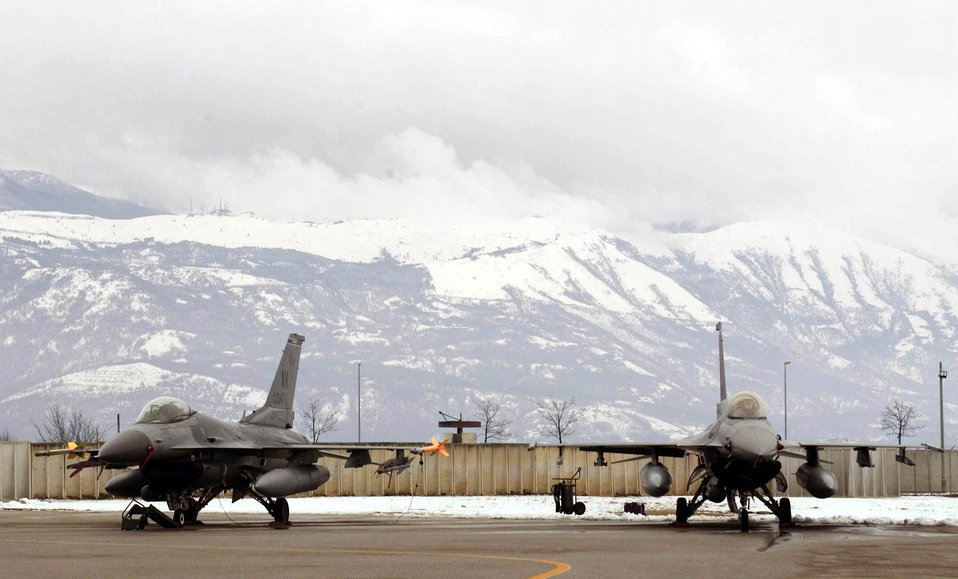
Frozen Falcons

AVIANO AIR BASE Italy -- F-16 Fighting Falcons from the 510th Fighter Squadron are chilled after nearly six inches of snow accumulated here Feb. 21. Other than on the Italian Alps, snow does not hang around long in Italy. The area averages less than four inches of snowfall annually; the last significant snowfall was in December 2001.